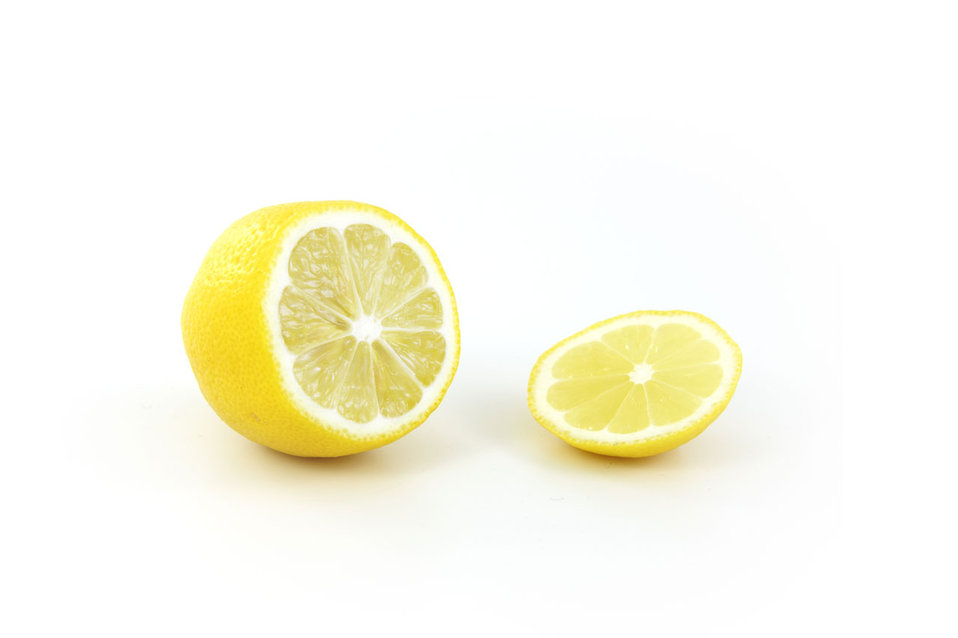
Lemon

Sliced lemon on white background.